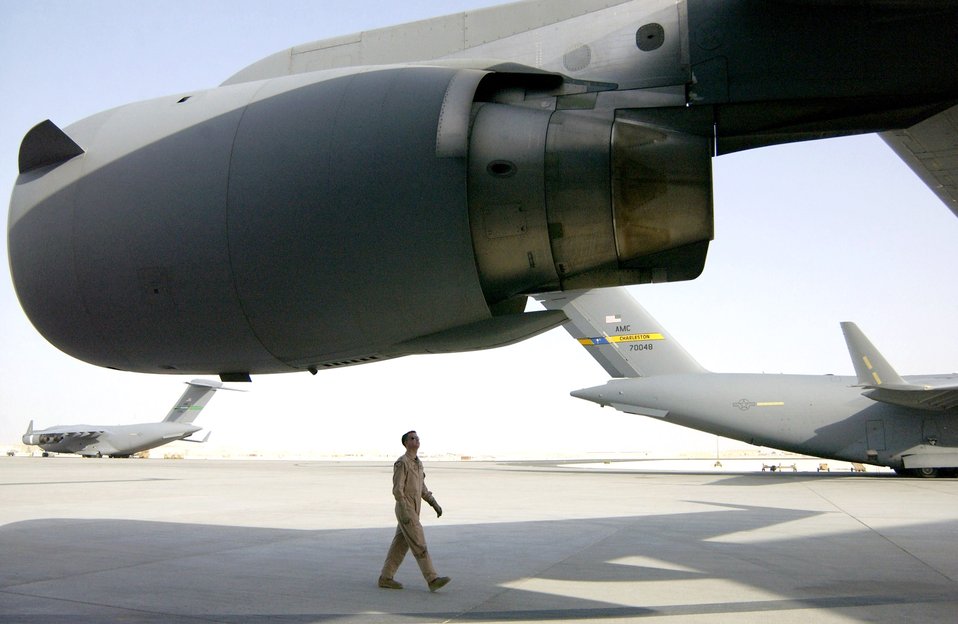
C-17 deployment length, efficiency increase

Capt. Pat Farrell performs a preflight check of a C-17 Globemaster III July 3 at a forward operating base in Southwest Asia prior to flying an airdrop mission. Deployed from Charleston Air Force Base, S.C., Captain Farrell is assigned to the 816th Expeditionary Airlift Squadron, one of two C-17 squadrons in the area of responsibility now deploying in rotation periods similar to air and space expeditionary force deployments.